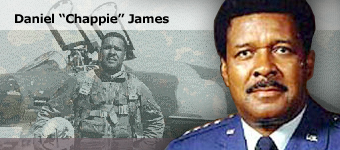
Gen. Daniel